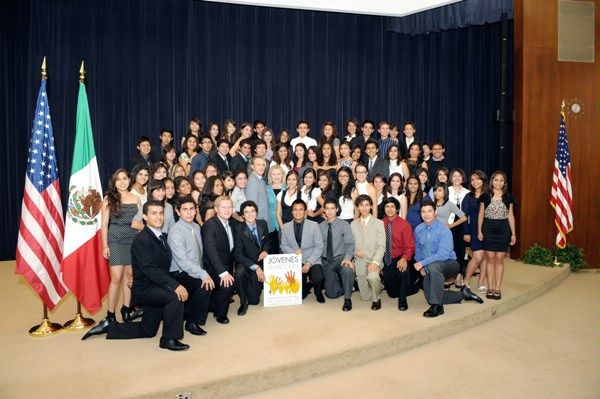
Secretary Clinton, Assistant Secretary Stock, Deputy Assistant Secretary Rooney, and Mexican Ambassador Sarukhan Meet With Jovenes en Accion Exchange Participants

U.S. Secretary of State Hillary Rodham Clinton, U.S. Assistant Secretary of State for Public Diplomacy and Public Affairs Ann Stock, U.S. Deputy Assistant Secretary for Western Hemisphere Affairs Matthew Rooney, and Mexican Ambassador to the United States Arturo Sarukhan meet with 68 Jovenes en Accion (Youth in Action) exchange participants to congratulate them on the successful completion of their program, at the U.S. Department of State in Washington, D.C., on August 9, 2011.